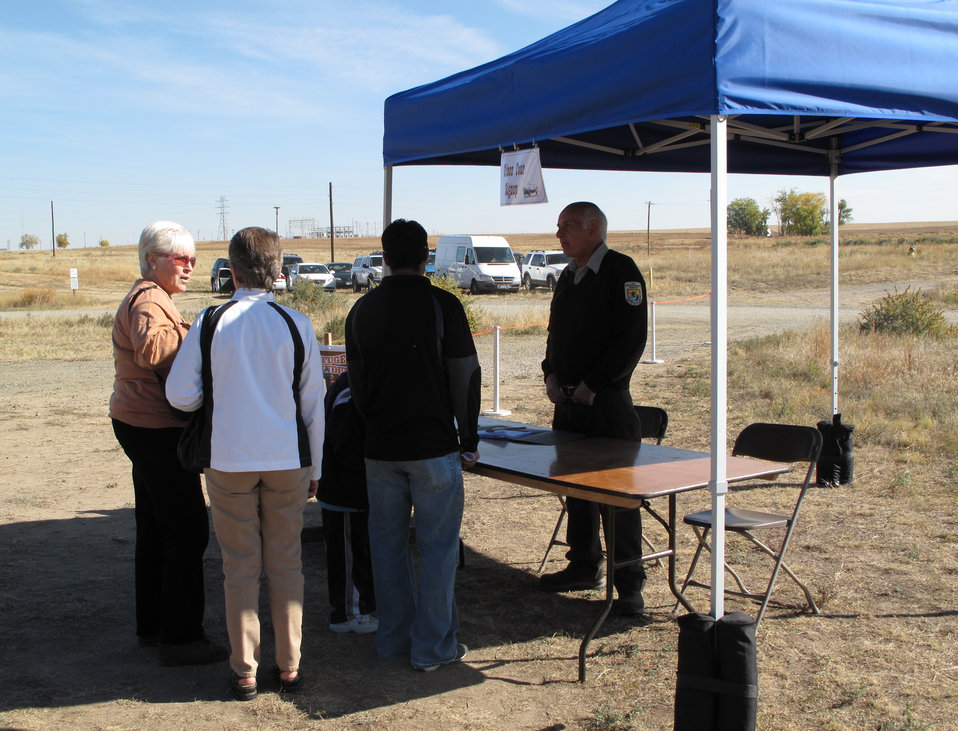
Refuge Round-up 2010

Always there to give assistance.